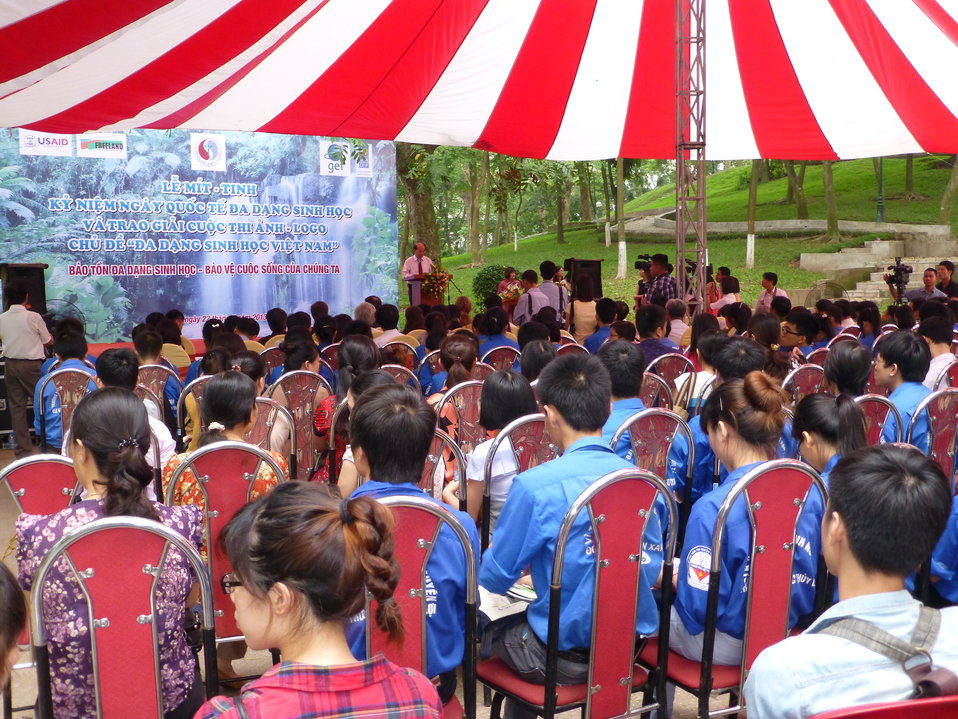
USAID Supports International Day for Biological Diversity in Hanoi